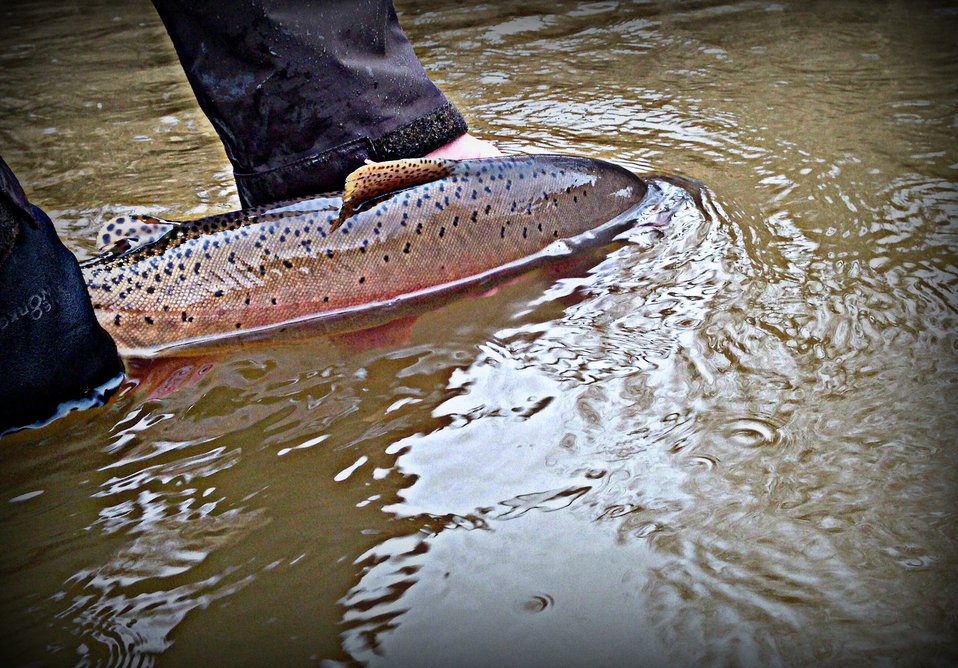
Tagged and ready for release

Tagged cutthroat ready for release.

A tagged non-native Yellowstone Cutthroat Trout being returned to Red Rock Creek, after being collected in a fish trap on Red Rock Lakes National Wildlife Refuge, MT.

This is the Montana Fish and Wildlife Conservation Office's second year of a five-year study to evaluate the effects of non-native fish removal efforts. These non-native trout are being removed from Red Rock Creek to help ensure that native Arctic Grayling persist into the future.

Arctic Grayling inhabiting the Refuge represent one of the last remnant populations within the contiguous United States. Arctic Grayling are considered a species of special concern by the State of Montana, the US Fish and Wildlife Service, and other resource management agencies.